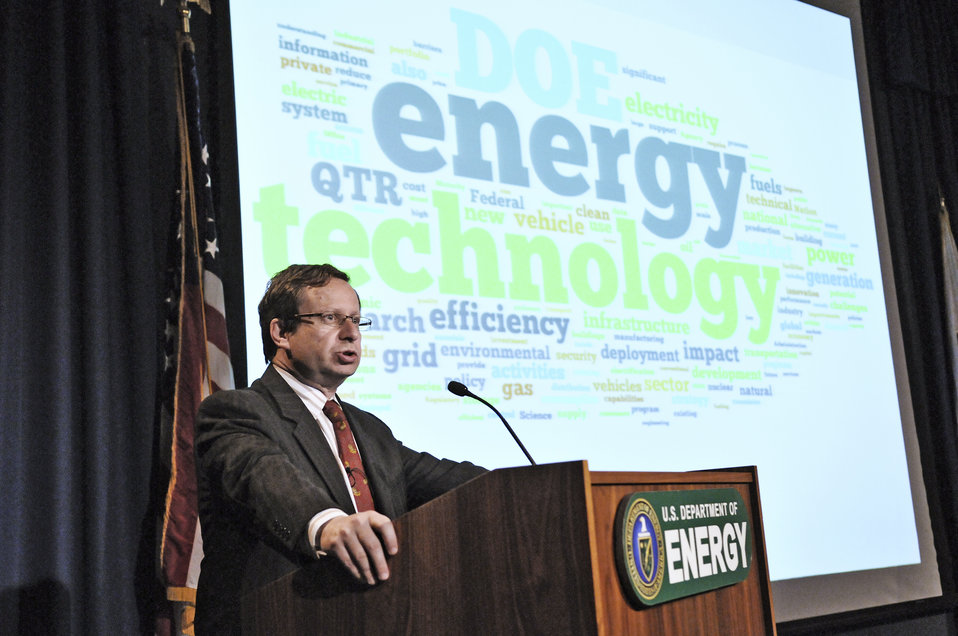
Dr. Steve Koonin releases the results of the the Department of Energy's Quadrennial Technology Review.